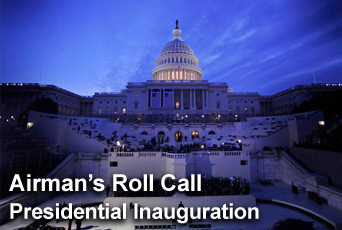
Airman's Roll Call: Presidential inauguration

This week's Airman's Roll Call focuses on preparation efforts for the 56th presidential inauguration Jan. 20.